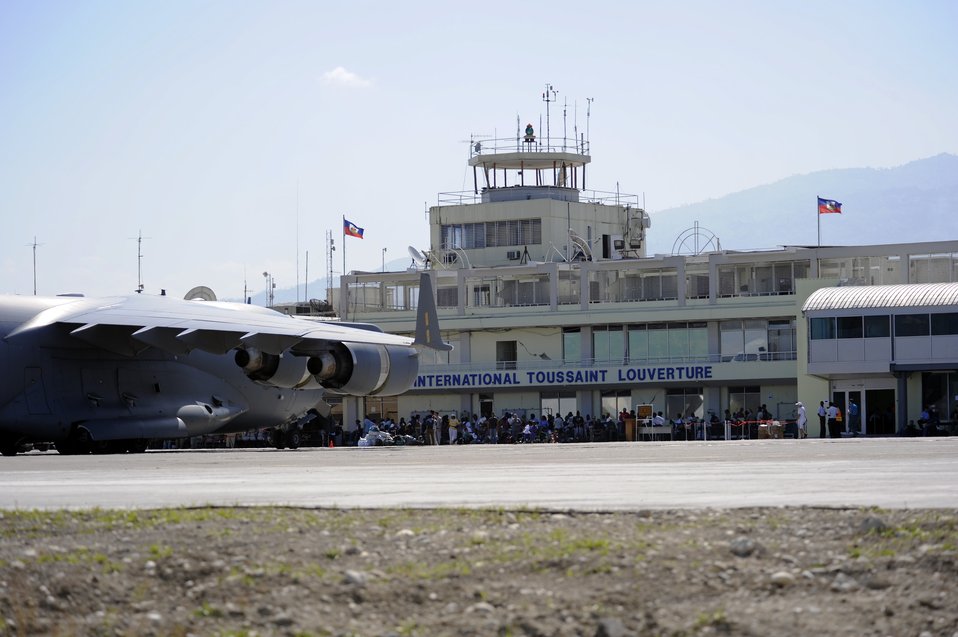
Evacuation

A group of Haitians wait to board a C-17 Globemaster III at Toussaint L'Ouverture International Airport in Port-au-Prince, Haiti, Jan. 23, 2010. Aircraft from all over the world are flying into the airport to drop off humanitarian aid and transport people out of the country in the aftermath of the devastating earthquake Jan. 12.